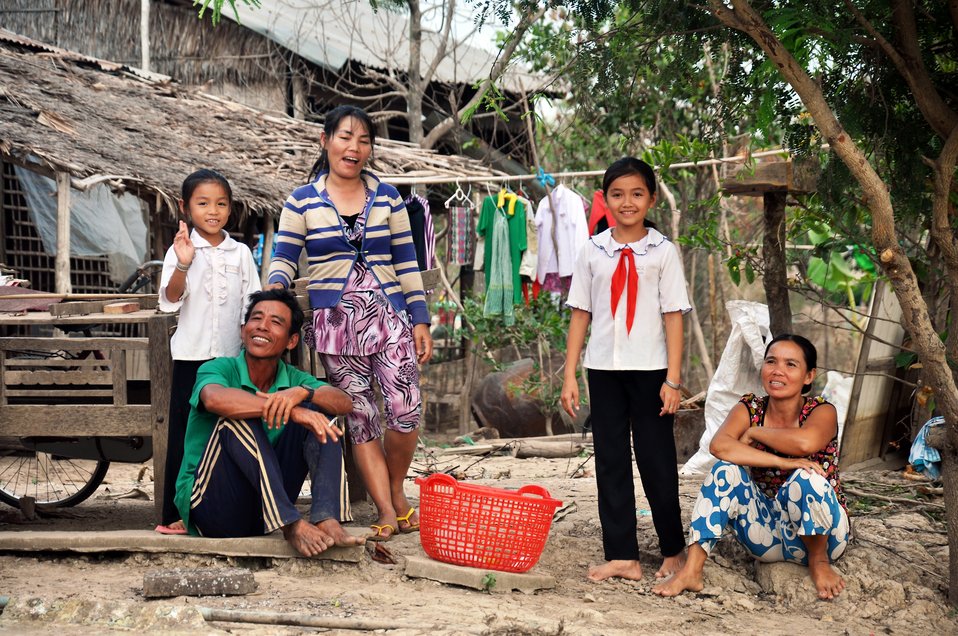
Flood Relief Beneficiary Community Members in Long An Province

USAID site visit to Long An Province to visit flood relief beneficiaries